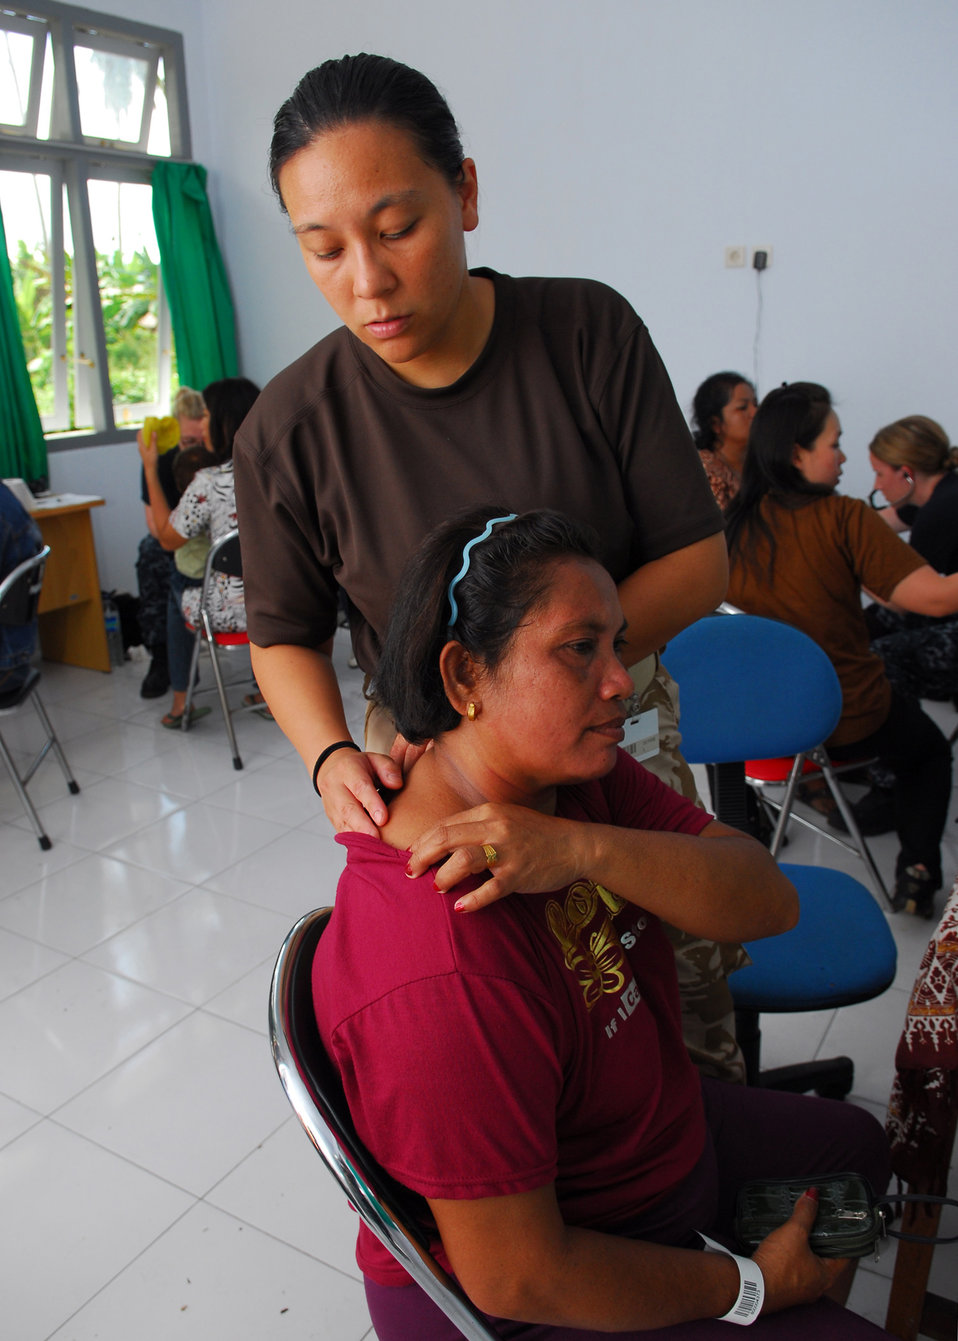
United Kingdom Royal Navy Surg. Lt. Laura Skyrme examines a patient’s back during a medical civic action program in Sofifi, Indonesia, on July 20, 2010. Mercy is in the North Maluku Islands conducting Pacific Partnership 2010, the fifth in a series of annual U.S. Pacific Fleet endeavors conducted in Indonesia as a disaster relief exercise aimed at strengthening regional partnerships.